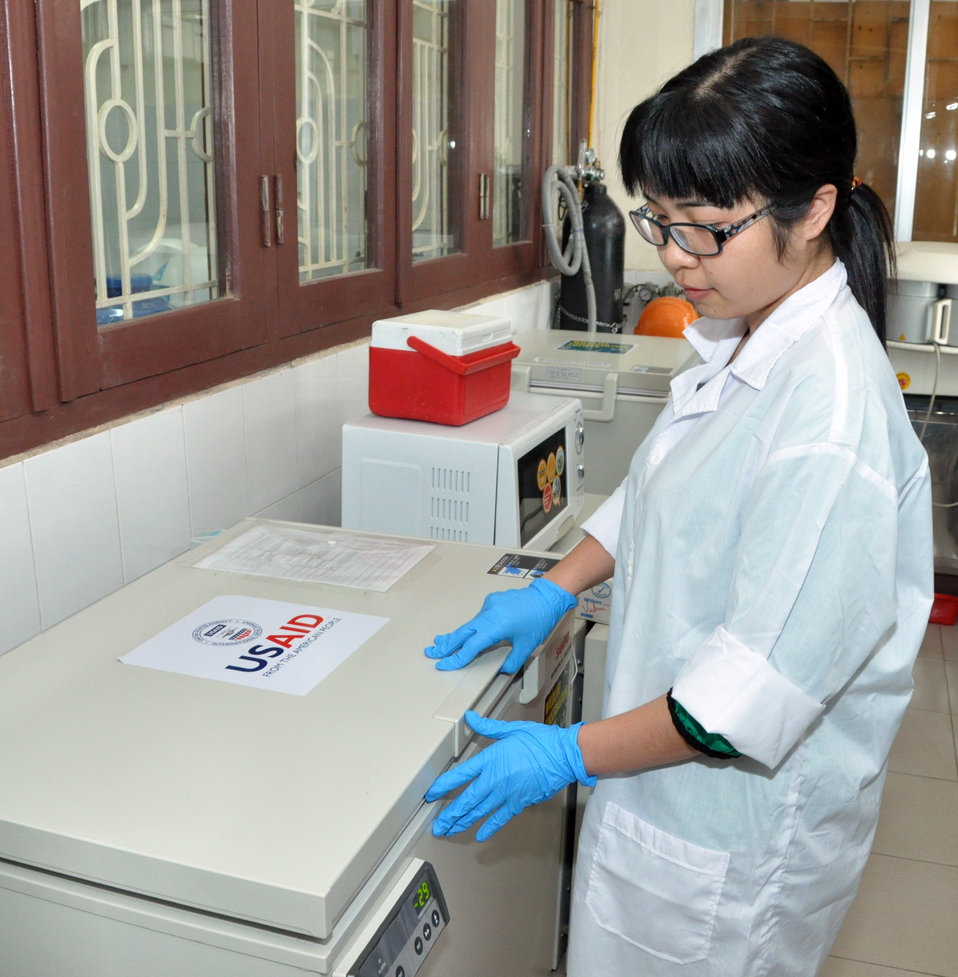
Animal virus detection lab training in Hanoi

Trainees learn how to detect viruses in Hanoi under a USAID program.